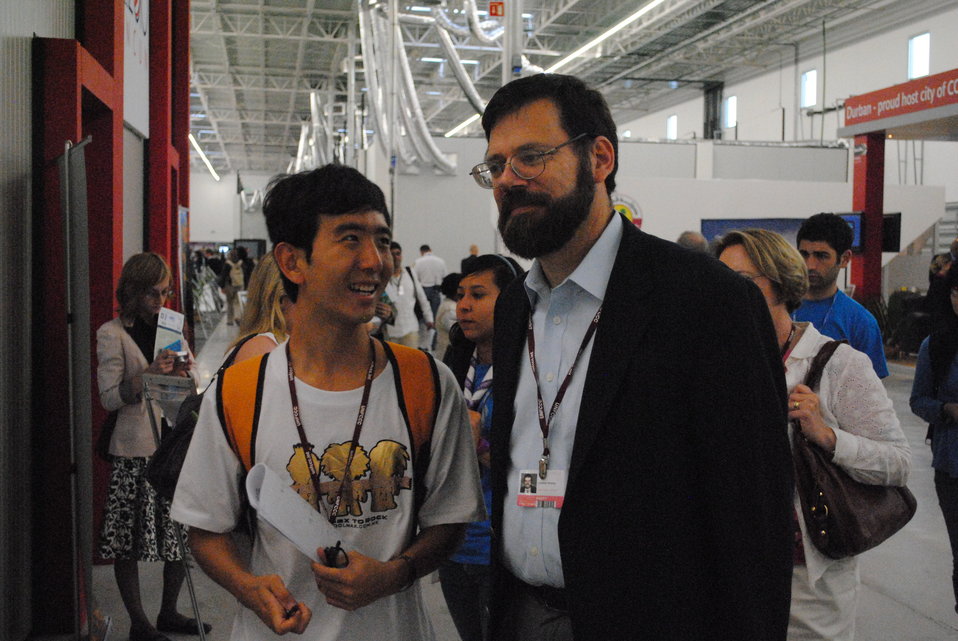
Deputy Special Envoy Pershing Speaks With a Member of the Audience

A member of the audience speaks with U.S. Deputy Special Envoy for Climate Change Jonathan Pershing after the side event, Enhancing Capacity for Low Emission Development Strategies, at the U.S. Center at COP-16 in Cancun, Mexico, on December 2, 2010.